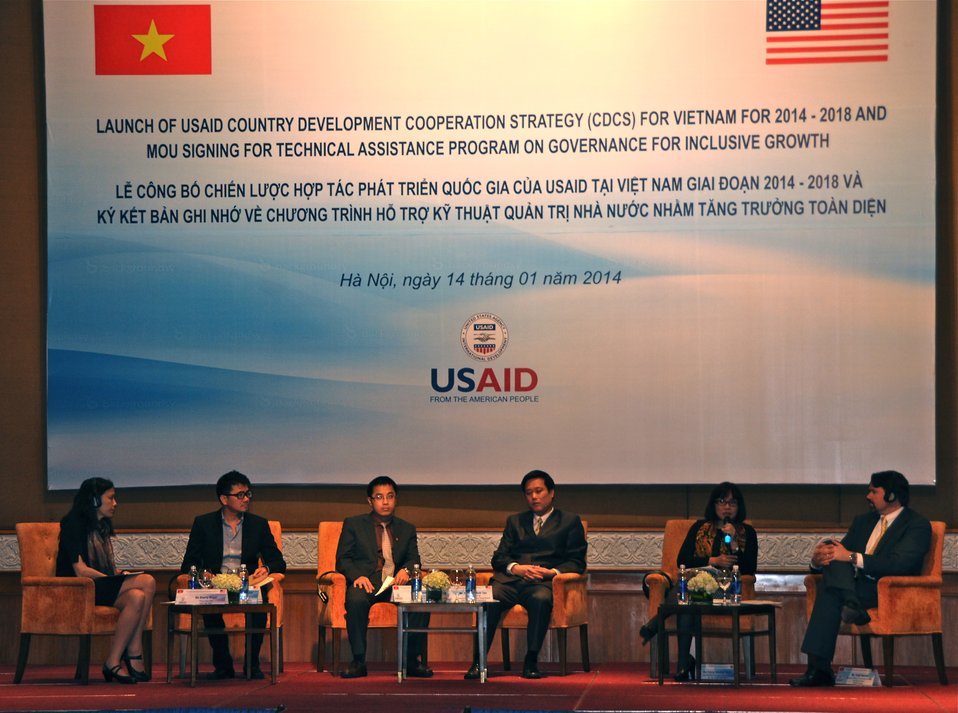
USAID Launches Five Year Partnership Strategy and Governance for Inclusive Growth Program